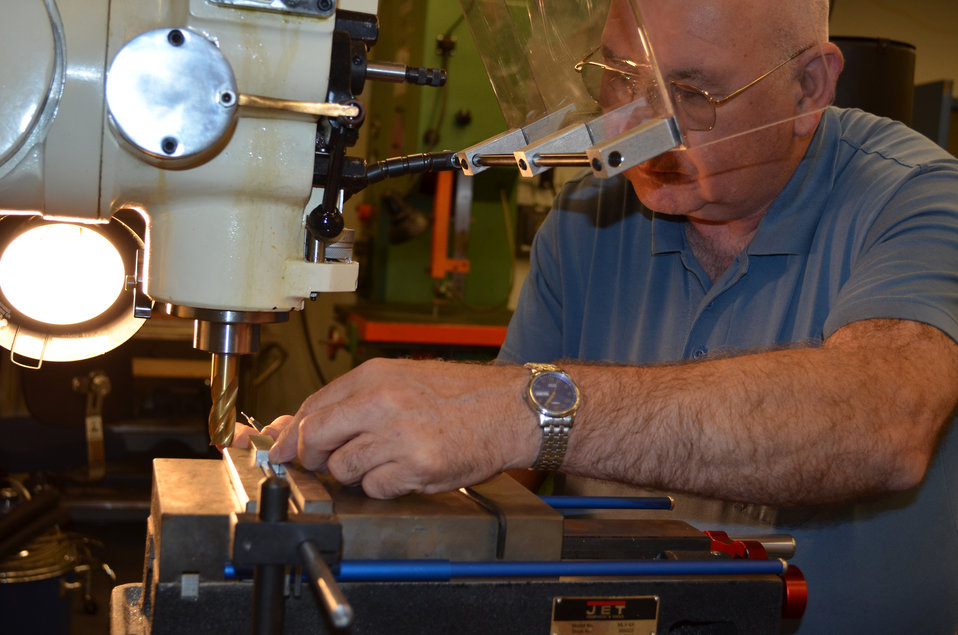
Photographed at a milling machine in his engineering suite, Engineering Technician, Mr. Jerry Kratzer, a member of the Engineering & Physical Hazards Branch of the Division of Applied Research and Technology (DART), was in the process of fabricating a microphone mounting device at the request of the Hearing Protection Group.'We help save hearing, protect people, and support the mission of public health by providing better protection for the American worker by designing and fabricating devices that are not available on the commercial market', says engineer Kratzer.